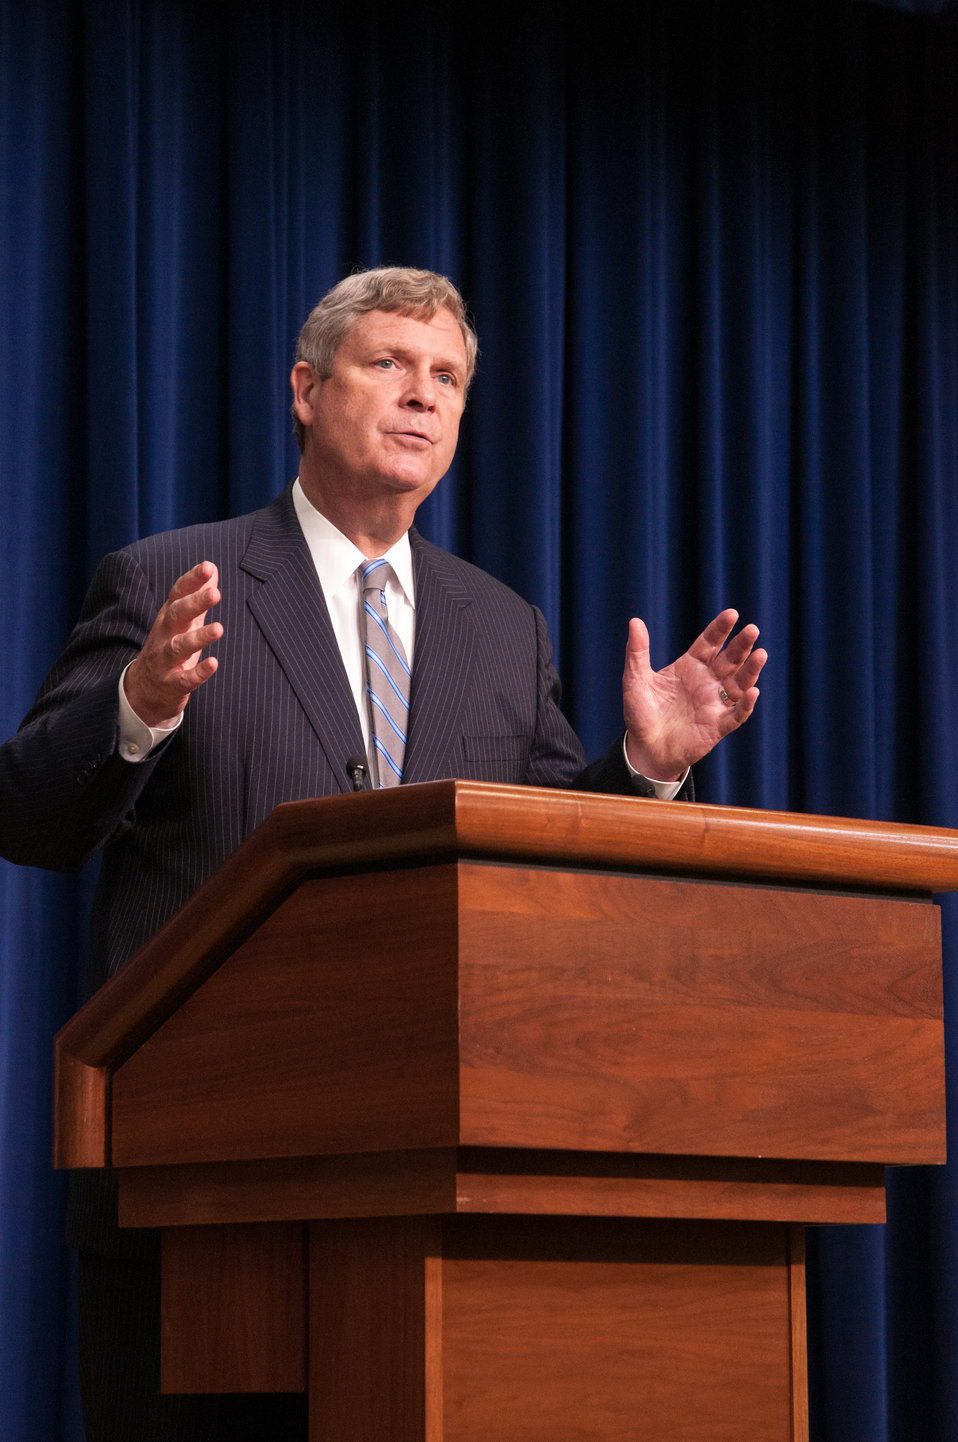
Agriculture Secretary Tom Vilsack speaks at a meeting of the White House Rural Council to an audience of the National State President’s Conference of the FFA on Wednesday, Jul. 24, 2013 in Washington, D.C. Secretary Vilsack took questions from the audience and discussed international, national and agricultural production topics with the FFA State President’s.